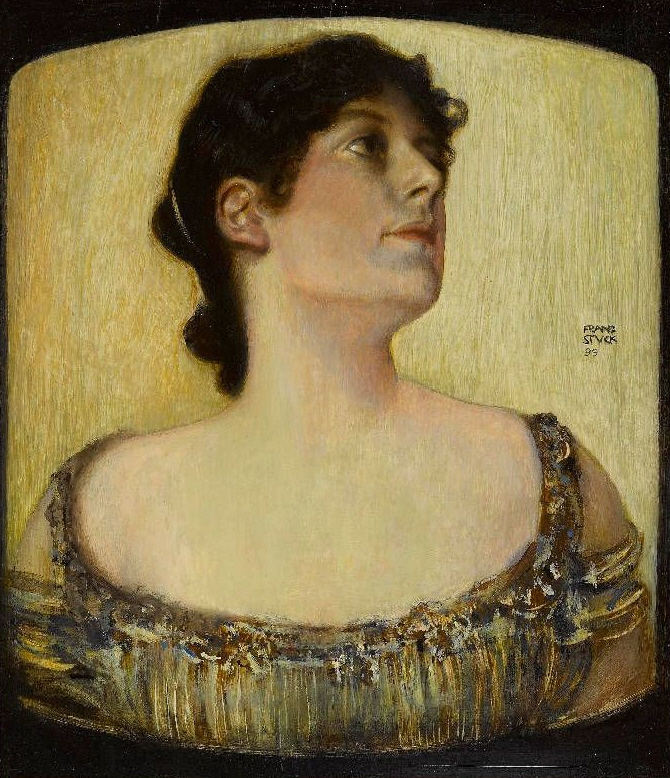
Bildnis Frau Mary Stuck. Öl auf Holz. 49,5 x 42 cm